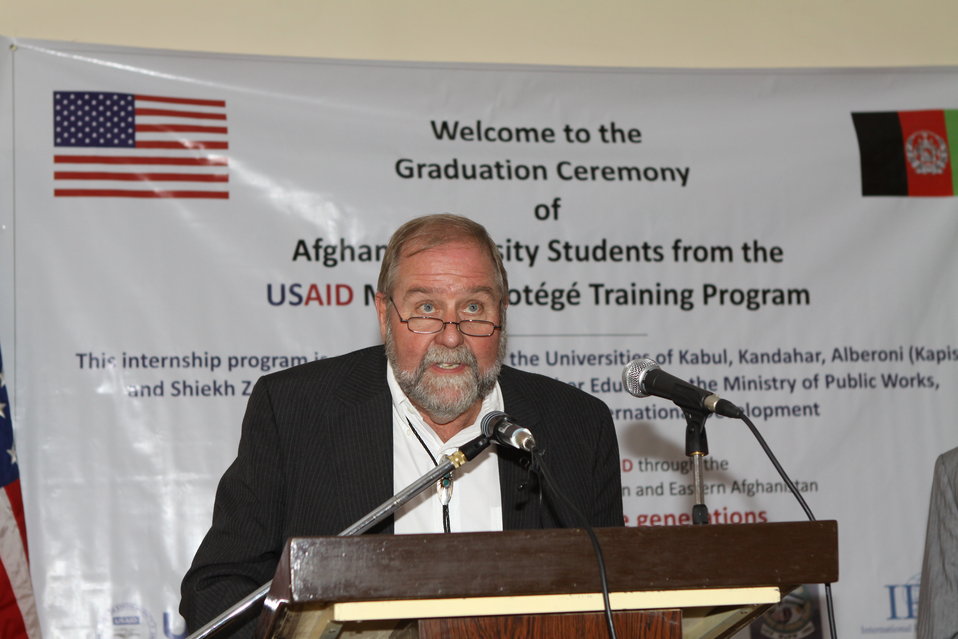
Female University Students Complete Internship

Kabul, Afghanistan | March 16, 2011 – In response to a demand for qualified Afghan engineers, Kabul University celebrated completion of an intensive five-month Mentor Protégé Training Program today by 10 female fourth year university students. The Training Program is a joint effort between the Government of the Islamic Republic of Afghanistan, the U.S. Agency for International Development (USAID), and the Universities of Kabul, Kandahar, Alberoony in Kapisa, Shiekh Zayed in Khost. The graduation ceremony highlighted collaboration with these national institutions in building the technical skills of young Afghans, made possible by USAID.

Four of the interns are engineers, while the remaining six are from the faculties of computer science, economics, and psychology.

Speaking about the event, H.E. Minister of Public Works Abdul Qudus Hamidi said, “The future of Afghanistan lies in developing the skills of our youth, and the engineering skills of these graduates today represent a small but important step forward for the country.”

Keynote speakers at the ceremony included H.E. Deputy Minister of Higher Education Abdul Rahim; USAID Senior Deputy Mission Director Robert Hellyer; and Chancellor of Kabul University Professor Hamidullah Amin. Approximately 150 people, including current and former students attended the graduation.

Launched last year, the Mentor Protégé Training Program has provided qualifying students the opportunity to intern with USAID’s Strategic Provincial Roads-South and East Afghanistan project and gain practical experience in a real work environment. The goal of the program was to offer interns the opportunity to gain hands-on experience to reinforce their formal studies. A total of 30 students from four national universities have benefitted from this program.

“The promotion of women’s rights is integrated into the overall U.S. Government development strategy and can be found in key programs, including education, healthcare, security, rule of law, political participation, agriculture, and economic development,” said Robert Hellyer. “The U.S. Government is committed to the Afghan leadership of programs that directly enhance development, particularly as it relates to women’s issues.”

This event also highlighted the learning achievements of students and emphasized the importance of hands-on internship programs. The curriculum is designed to instill students with the knowledge and confidence to qualify for engineering positions upon completion of their fourth year at their respective universities.